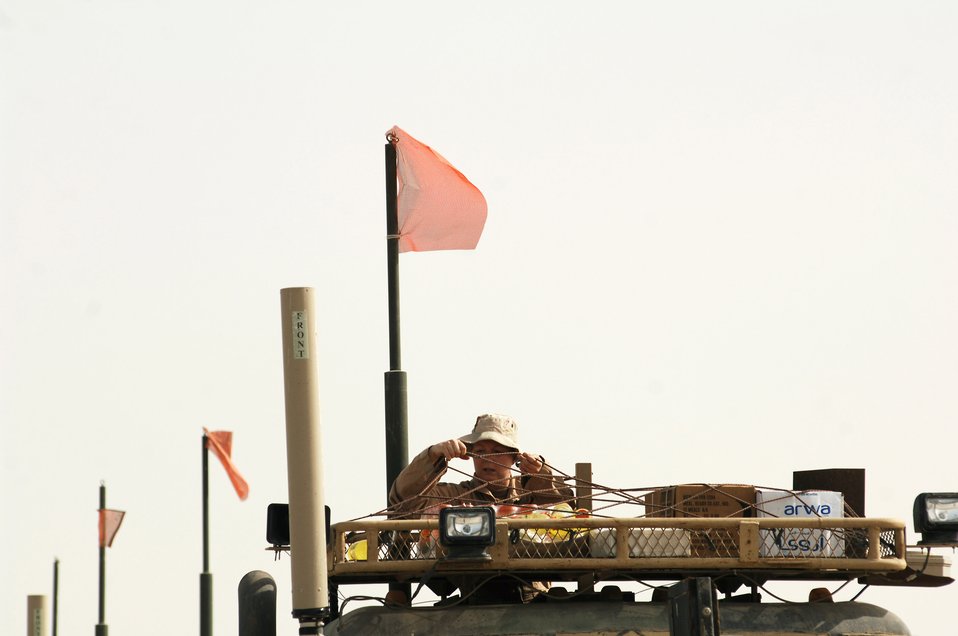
Combat truckers haul cargo through dangerous roads

Staff Sgt. Tiffany Jennings secures supplies onto the roof a tractor-trailer truck before heading out on a recent convoy from an Army camp in Southwest Asia. The Airmen of the 70th and 424th Medium Truck detachments assigned to the 586th Expeditionary Logistics Readiness Squadron are in-lieu-of forces supporting the Army support line-haul convoy movements in and out of Iraq. Sergeant Jennings is a loadmaster from the 586th ELRS, 70th MTD deployed from Pope Air Force Base, N.C.